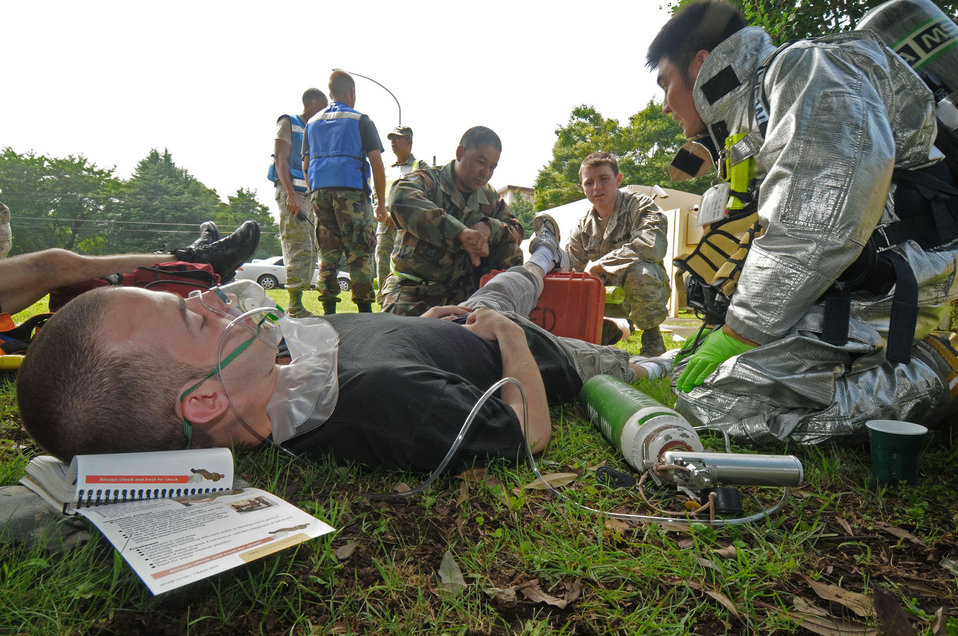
Apply first aid here

Airman 1st Class Brandon Lee receives buddy care for